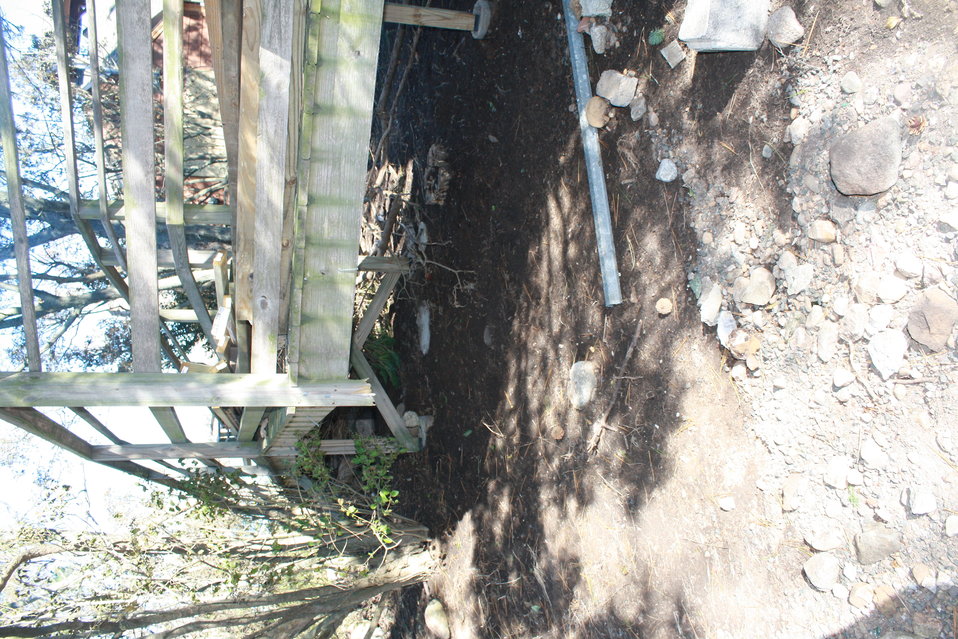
Damage at Stewart B. McKinney National Wildlife Refuge (CT)

A missing support beam on the handicap accessible trail on Outer Island after Hurricane Sandy.